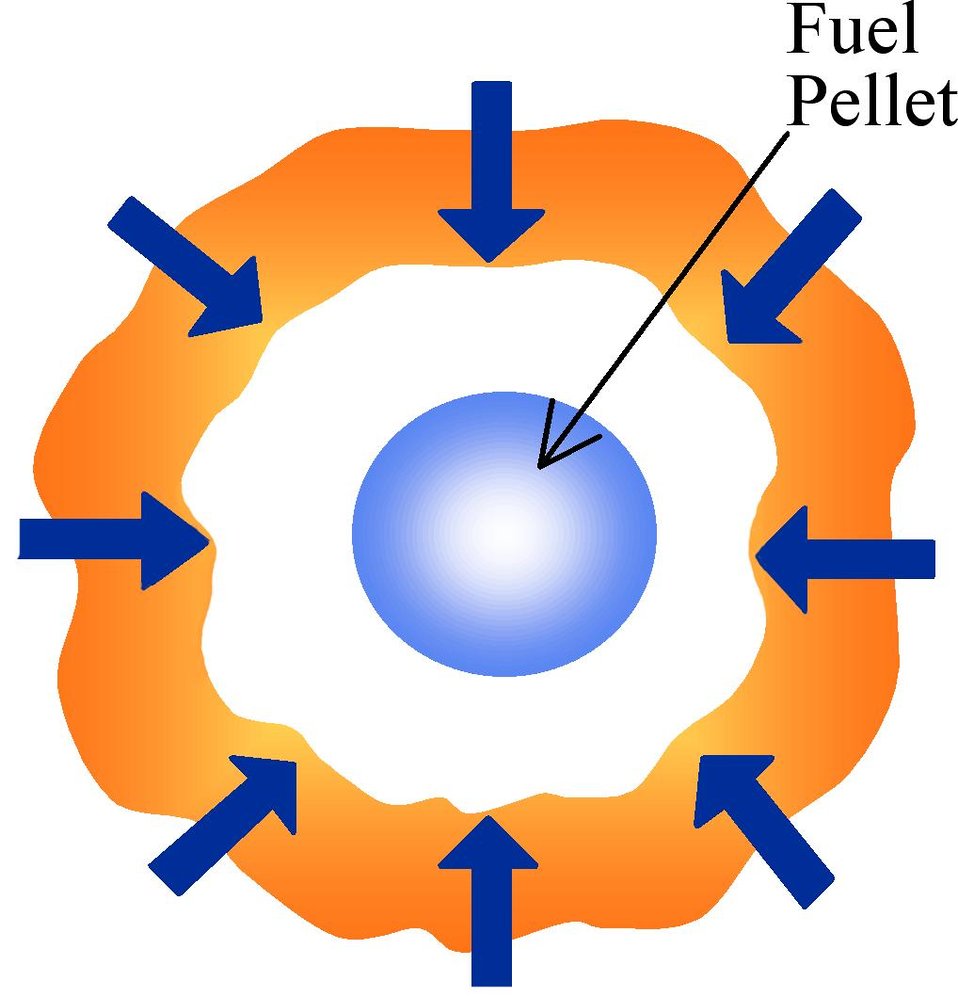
INERTIAL FUSION ENERGY CONCEPT.

FUSION IS THE POWER SOURCE OF THE SUN AND STARS. IT OCCURS WHEN FORMS OF THE LIGHTEST ATOM, HYDROGEN, COMBINE TO MAKE HELIUM IN A VERY HOT (100 MILLION DEGREE CENTIGRADE) IONIZED GAS, OR PLASMA. TO ACHIEVE INERTIAL FUSION ENERGY POWERFUL LASERS OR PARTICLE BEAMS ARE FOCUSED ON A SMALL PELLET OR FUEL FOR FEW BILLIONTHS OF A SECOND. MAGNETIC FUSION ENERGY IS ANOTHER APPROACH TO FUSION ENERGY. DOE'S FUSION ENERGY SCIENCES PROGRAM LEADS THE NATION'S EFFORT IN THE STUDY OF PLASMA, THE FOURTH STATE OF MATTER, WHICH CONSTITUTES MOST OF THE VISIBLE UNIVERSE, AND IS AT THE CORE OF A FUSION POWER SYSTEM.